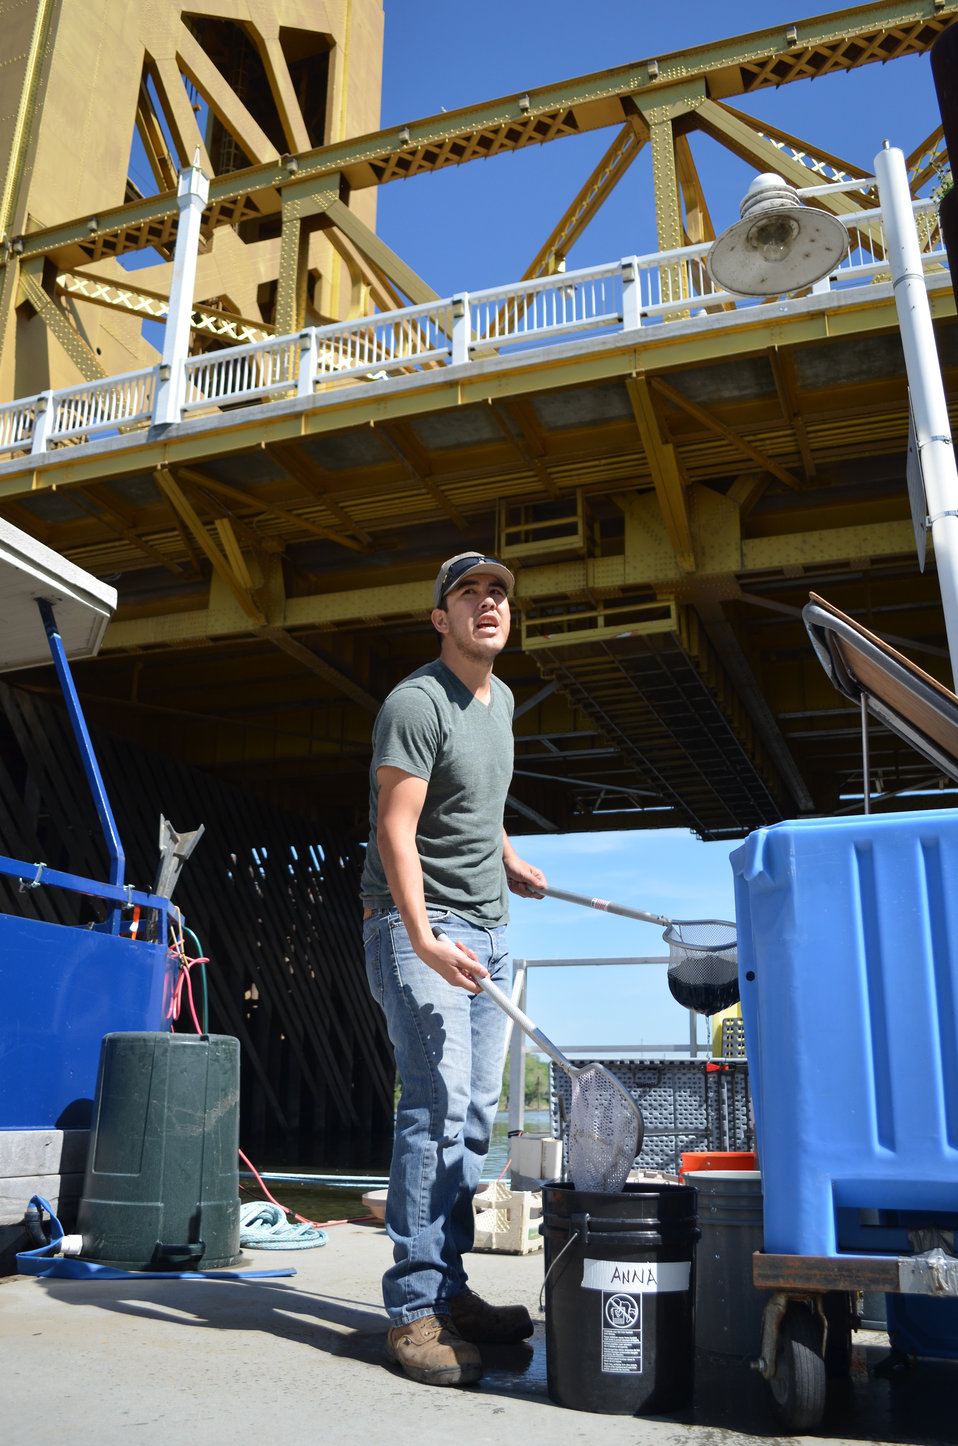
Calling for fish under the Tower Bridge

Mike Fong, environmental manager with the U.S. Army Corps of Engineers Sacramento District lets his fellow researchers know a fish is on the way to them April 16, 2014, under the Tower Bridge in Sacramento, Calif. It's all part of a collaborative effort with the U.S. Geological Survey, and California’s Department of Water Resources to share fish-telemetry data from more than 5,500 tagged fish throughout the Sacramento River system. The data will help Corps researchers better evaluate habitat restoration work under the Sacramento River Bank Protection Project - a joint flood risk reduction effort between the district and the state's California Central Valley Flood Protection Board to repair river bank erosion along the Sacramento River and its tributaries.